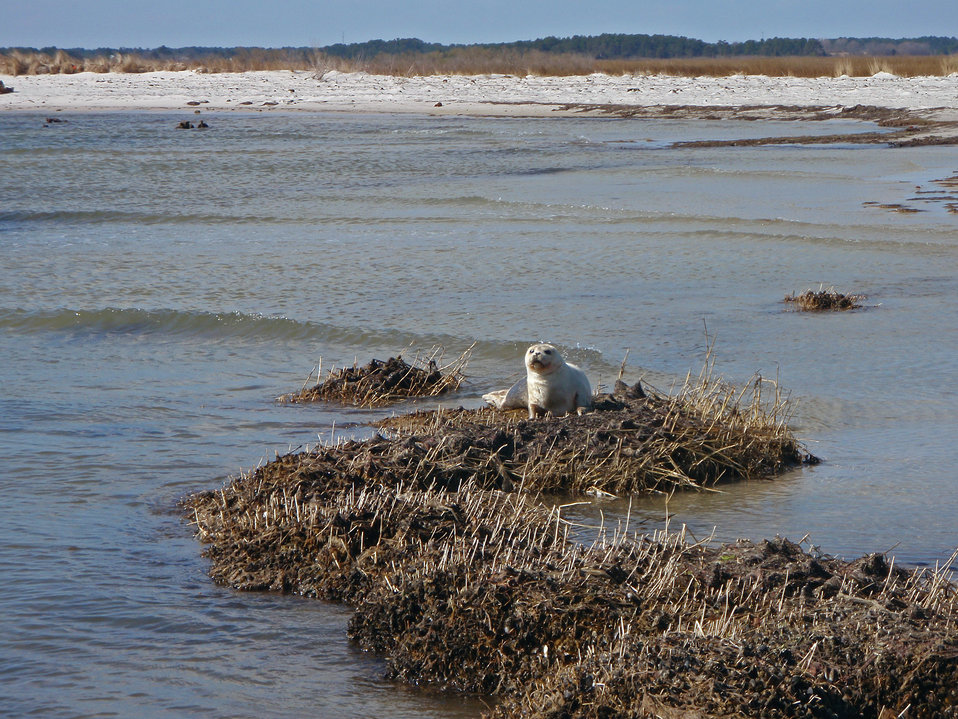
Harbor seal

Plum Tree Island National Wildlife Refuge, VA.